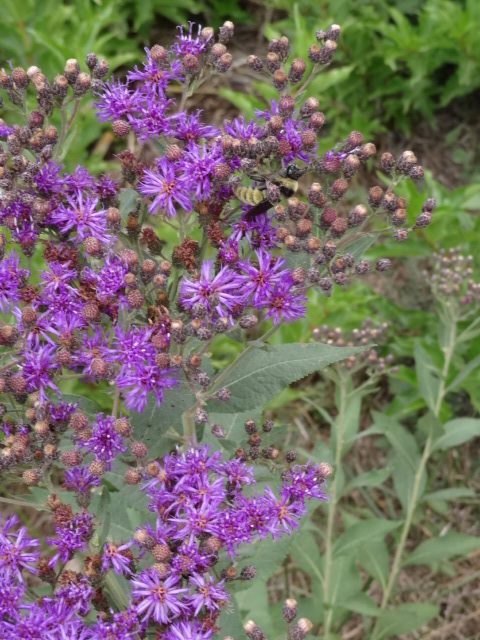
Prairie Wildflowers

Leavenworth eryngo (Eryngium leavenworthii) at Marais des Cygnes National Wildlife Refuge.